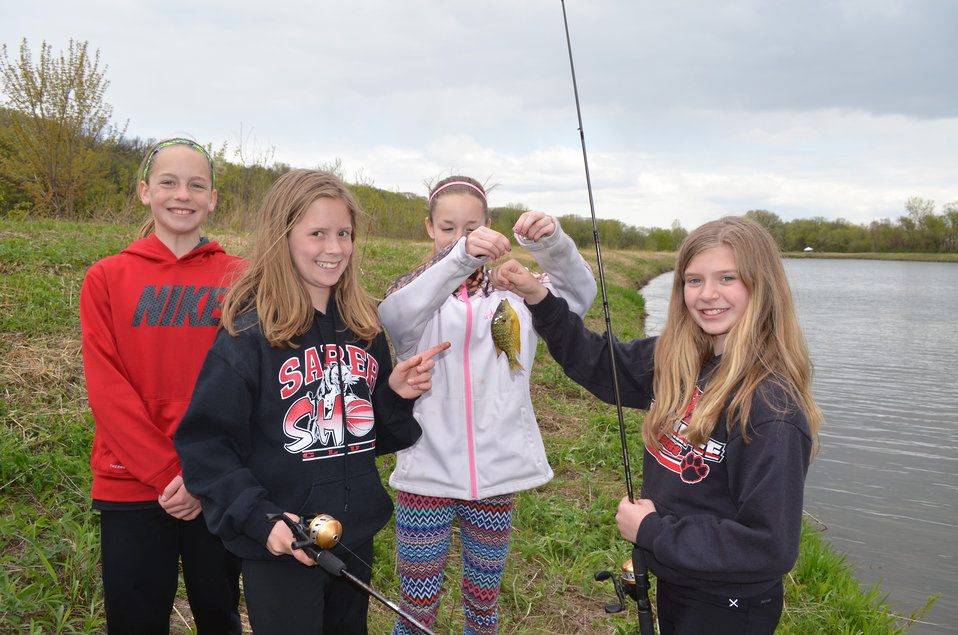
The girls are excited about this fish